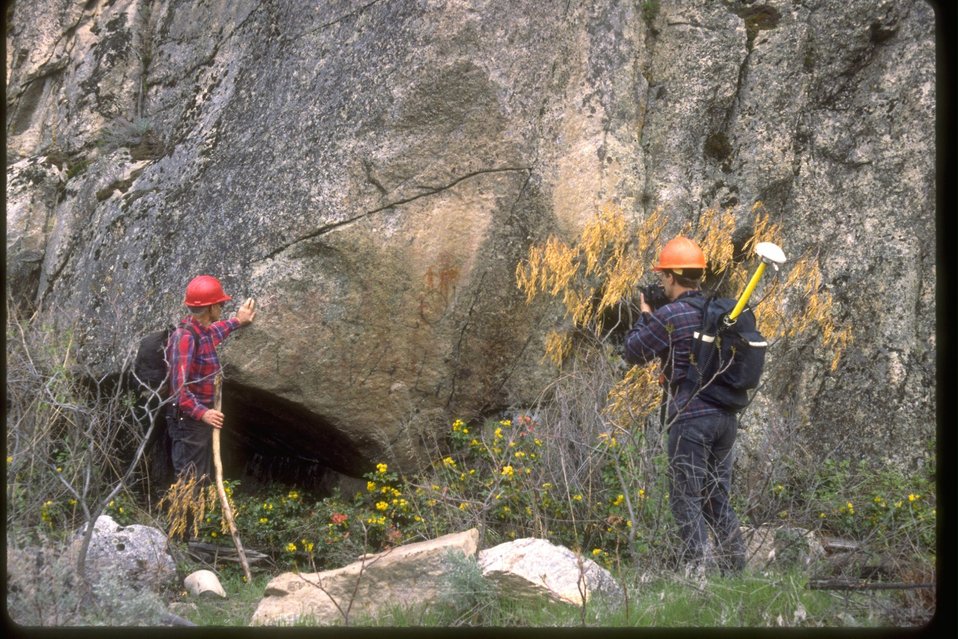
Passports in Time volunteer archeology project at Mt. Hull in Okanogan County, Washington.